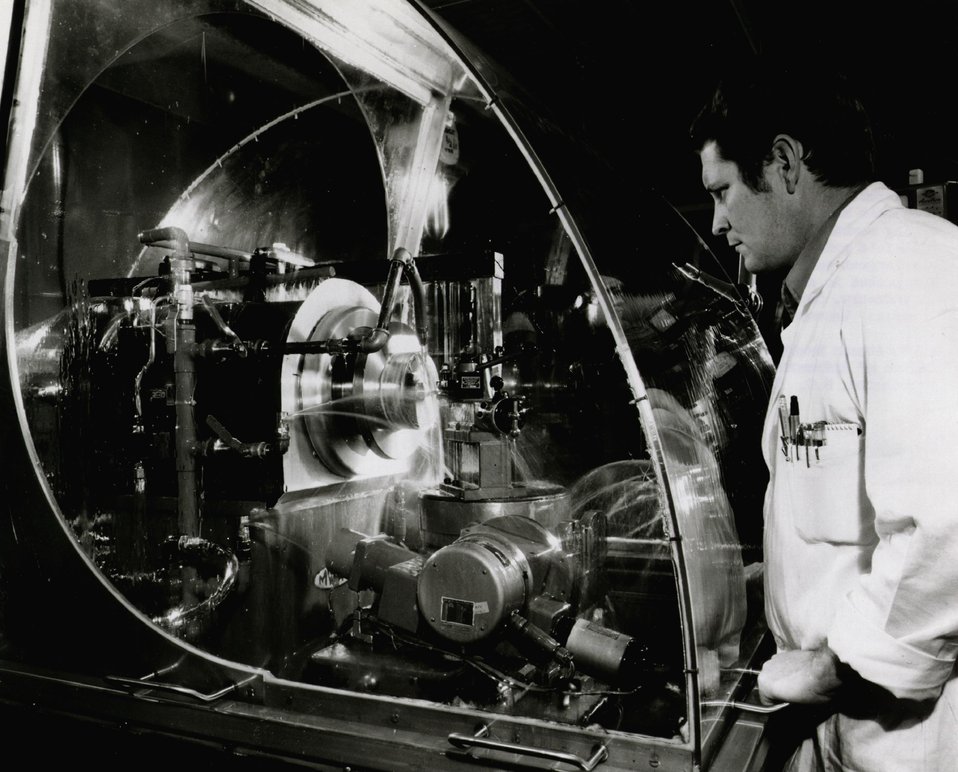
A major advance in precision machine tool practice, which virtually eliminates temperature variations as a source of cutting error, has been accomplished. Circa 1973.